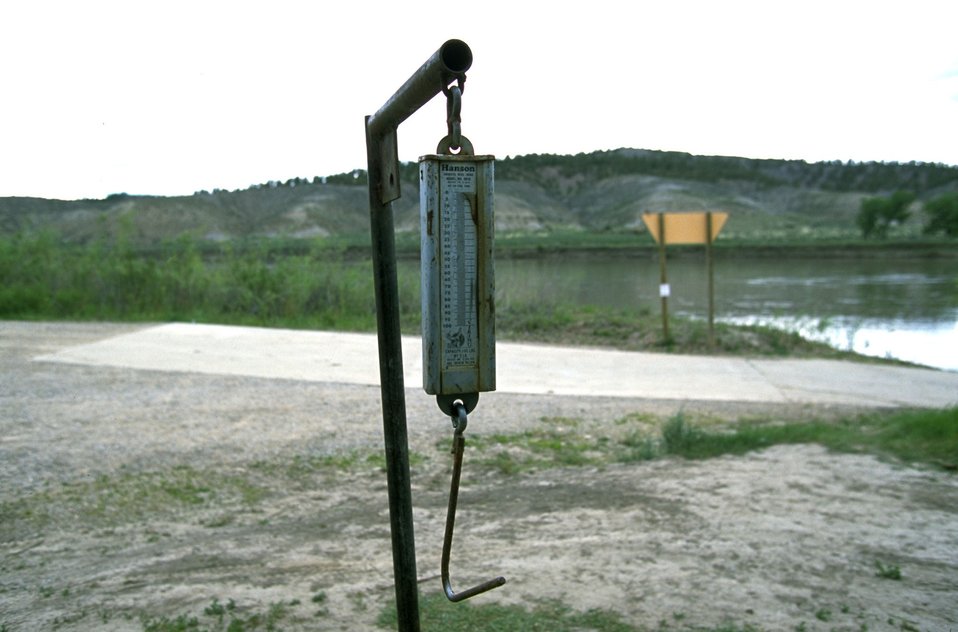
Fish Scale at Kipp Recreation Site in the Upper Missouri National Wild & Scenic River area